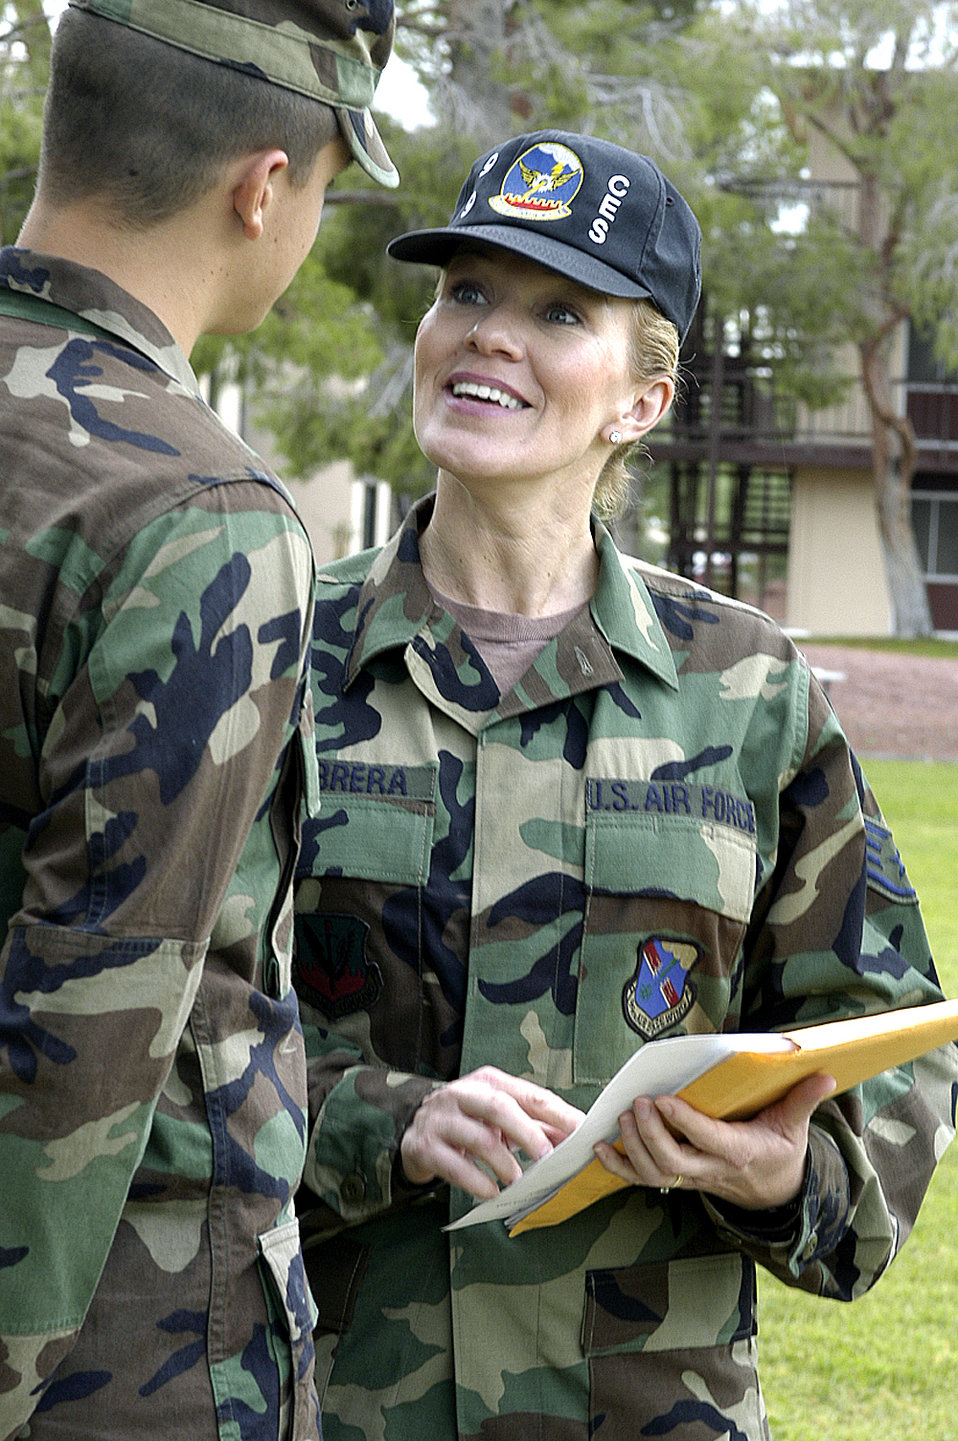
A breast cancer survivor shares her story

NELLIS AIR FORCE BASE, Nev. -- Staff Sgt. Ebbie Cabrerra talks with a resident of the dorm she manages here. She is a breast cancer survivor.